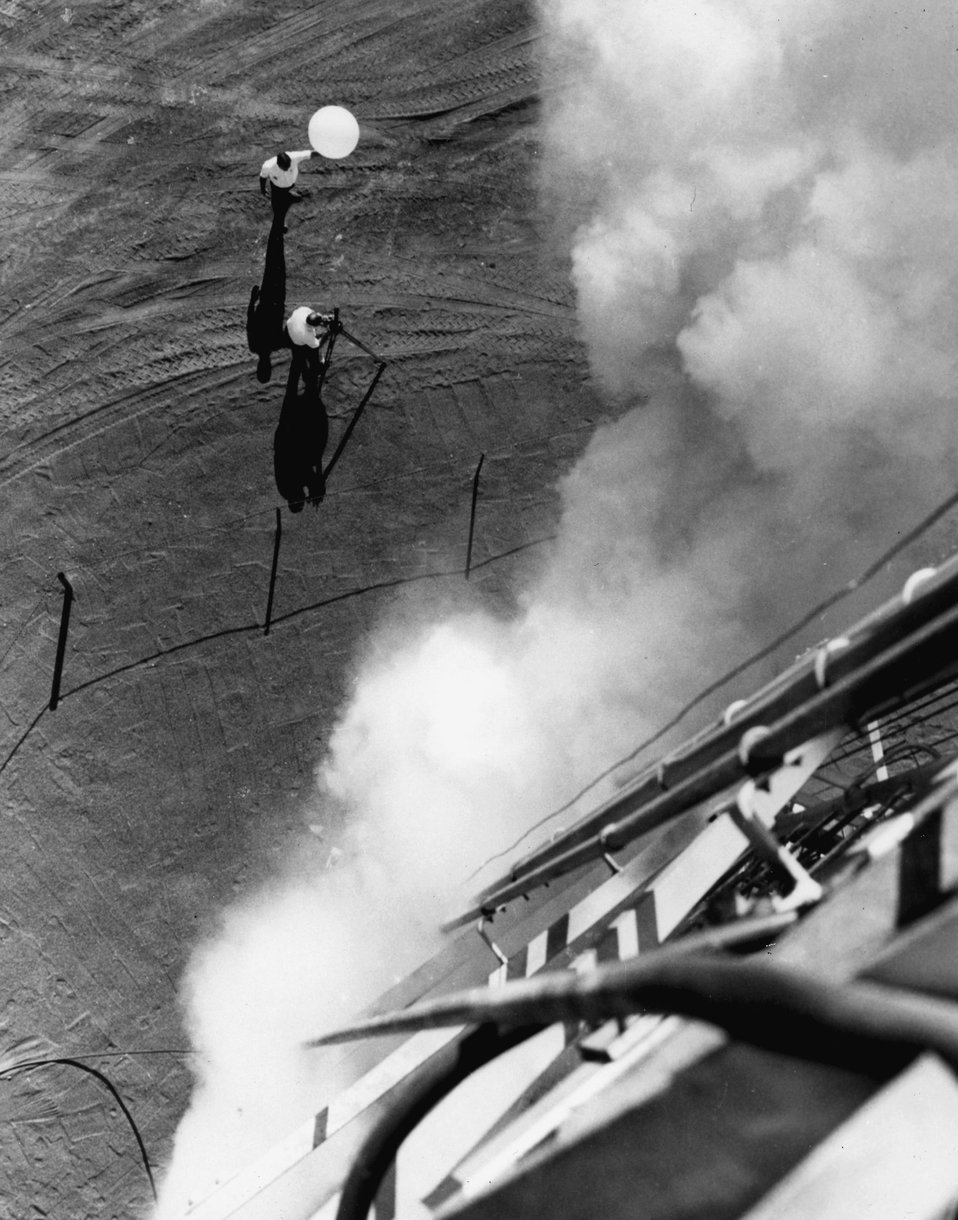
RICHLAND, WASHINGTON...Studies of atmospheric transport and dispersion on a meteorological grid at the AEC's Pacific Northwest Laboratory will increase the understanding of natural processes that play a major role in the management of air resources. c. 1970